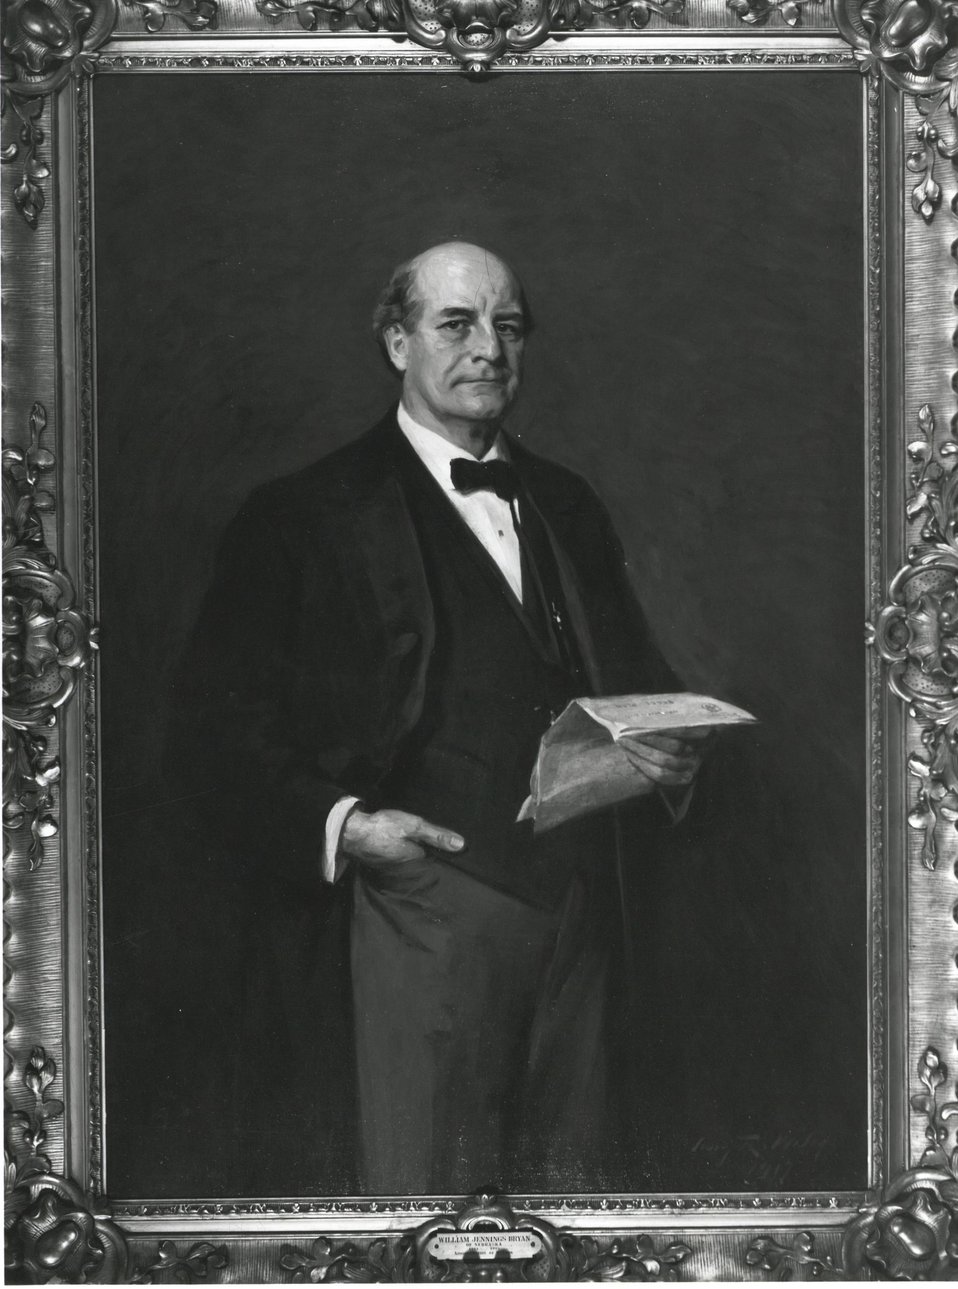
William Jennings Bryan, U.S. Secretary of State, March 5, 1913 to June 9, 1915